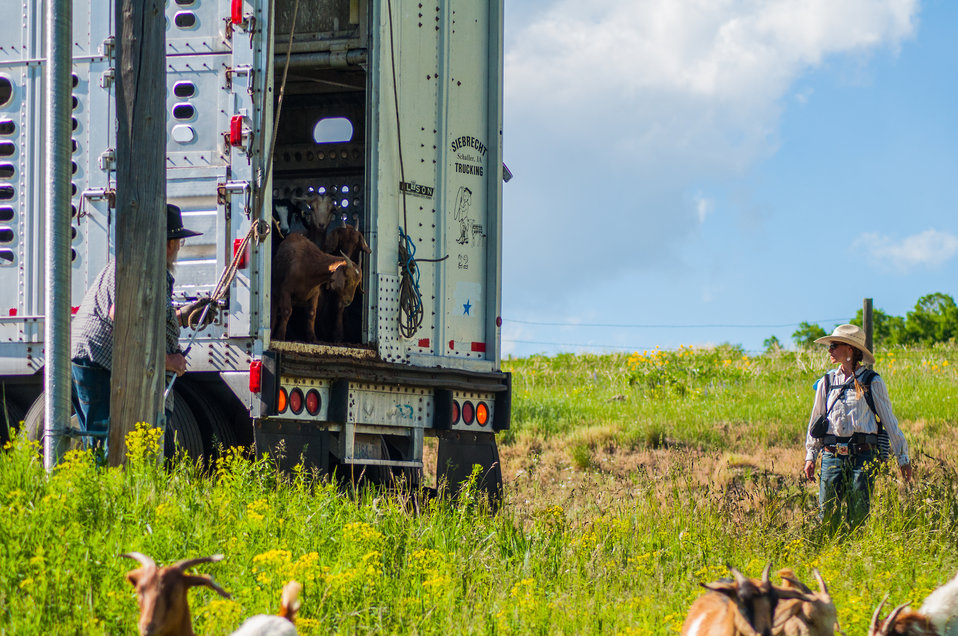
Goat landing on Bozeman Fish Technology Center

On June 8 at 5:00 p.m., 409 yearling domestic goats were off-loaded on the Bozeman Fish Technology Center (BFTC) campus. Thus begins a 3-4 year project of monitored targeted grazing and applications of friendly insects to control noxious weeds and manage brush overgrowth on property of the U.S. Fish and Wildlife Service BFTC.

Purposes of this effort are to reduce the presence of undesirable vegetation, promote restoration of native plants, and assist with fire protection by reducing burnable plant biomass.

The cooperative venture involves the U.S. Fish and Wildlife Service, Montana Outdoor Science School, Friends of the Bozeman Fish Technology Center, Gallatin Valley Land Trust, U.S. Forest Service, and Prescriptive Livestock Services. Integrated Weed Control is supplying the insects as an in-kind contribution to the project, and has applied insects on the BFTC’s 'hot spots' in previous years.